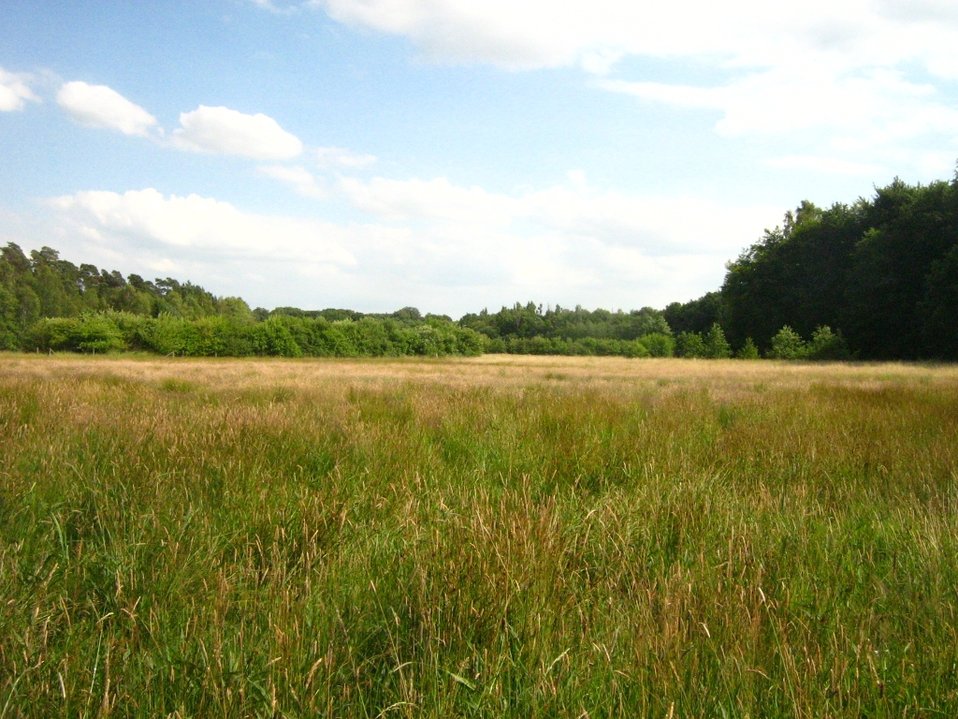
Deutsch: Der Dänschenburger Wald (Stadt Marlow, Mecklenburg).